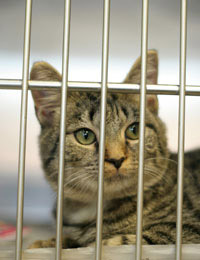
Passenger terminal becomes pet hotel for a night